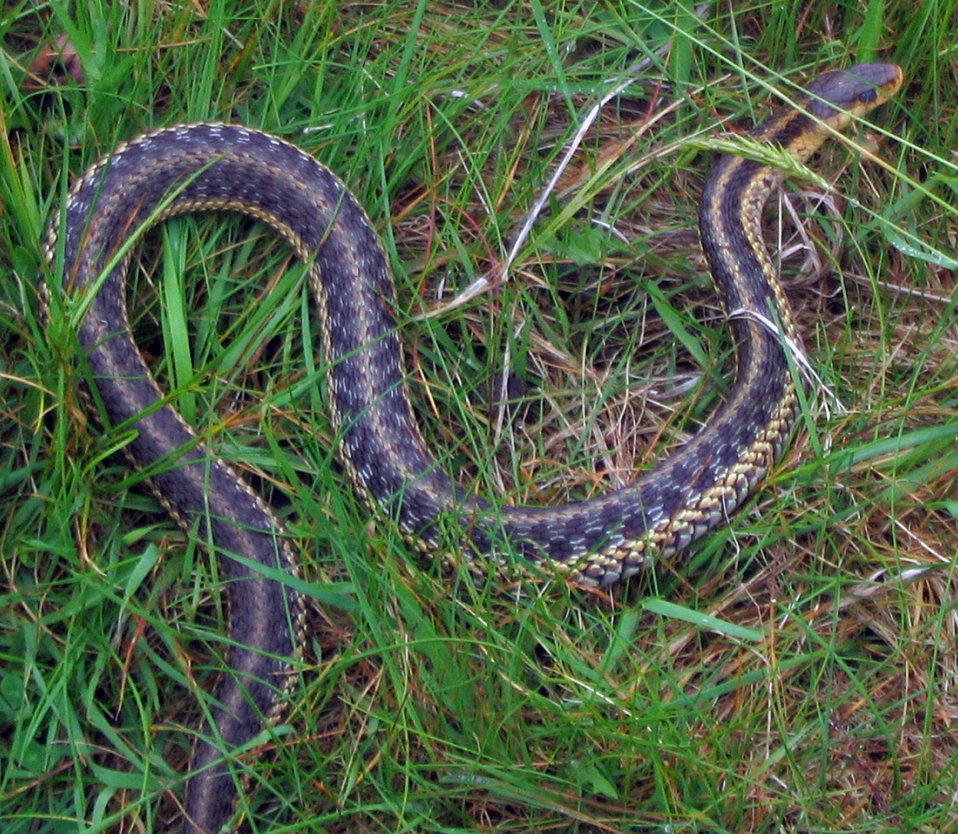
Garter snake

Sunkhaze Meadows National Wildlife Refuge, ME.